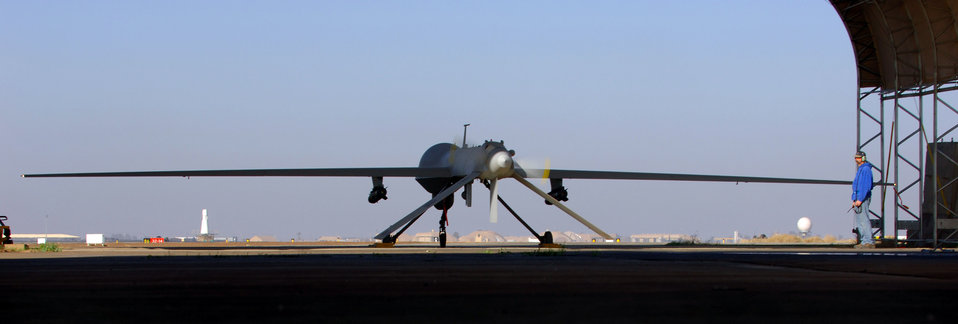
Silent eye in the sky: Predators keep constant vigil

Bruce Ottenwess conducts pre-flight checks before launching the MQ-1 Predator Unmanned Aerial Vehicle Jan. 31 from Balad Air Base, Iraq. Mr. Ottenwess is a General Atomics Aeronautical Systems Airframe and power plant mechanic based out of Creech Air Force Base, Nev.